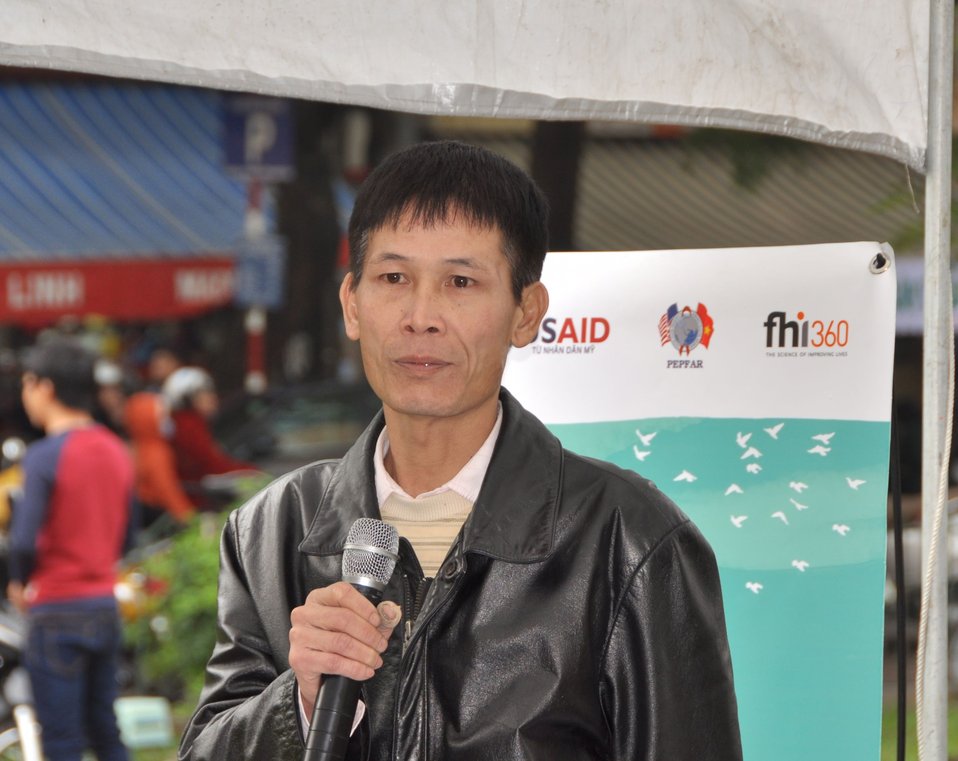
Beneficiary speaks about his experience in recovery

USAID/Vietnam